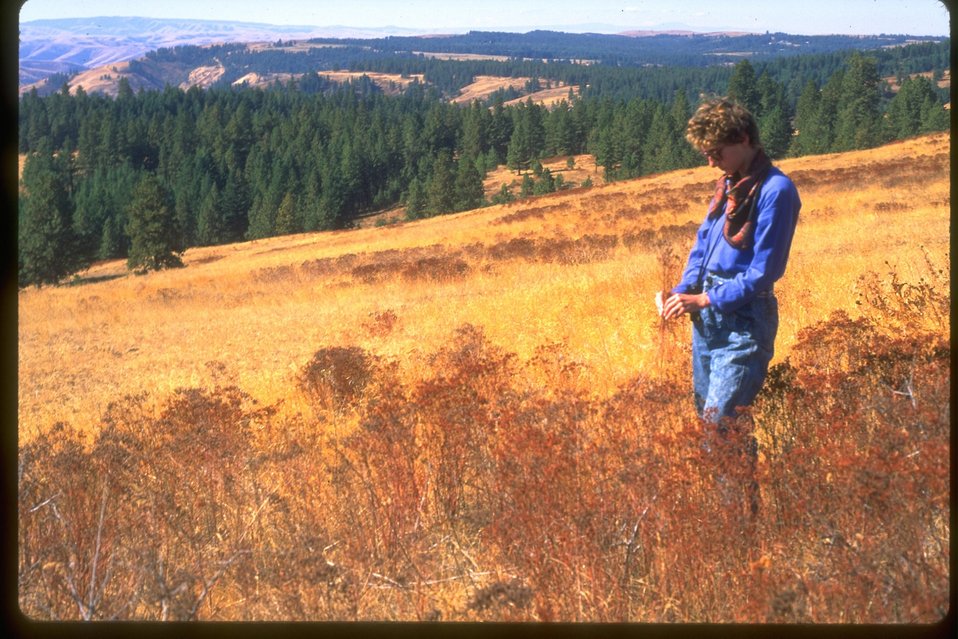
Brown Klammath Weed.